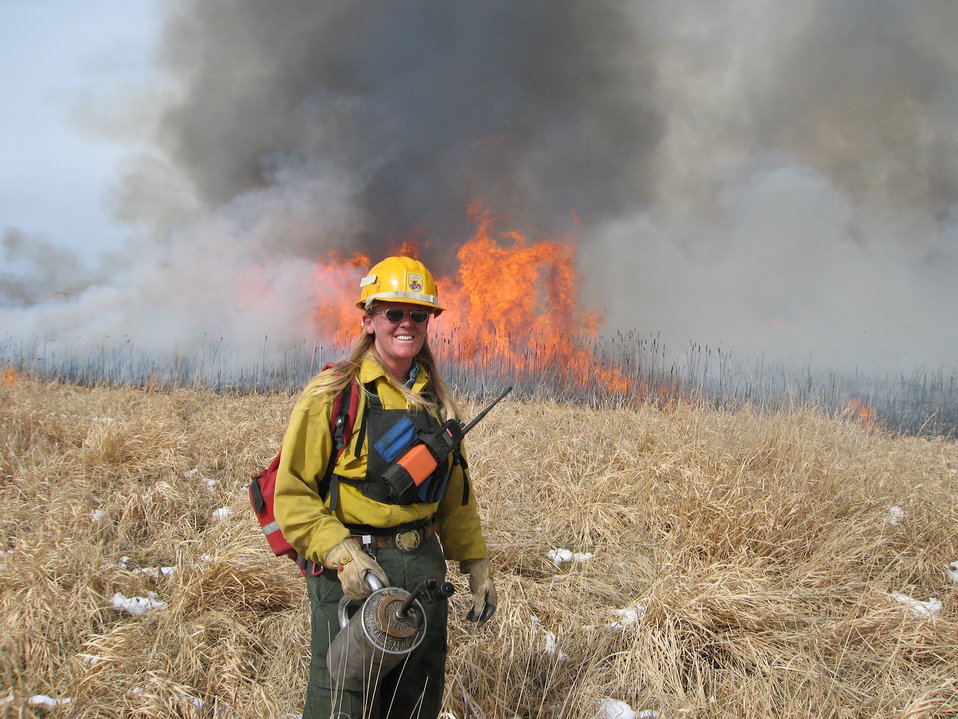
Habitat Maintenance

Fire can be used to reduce woody vegetation in grasslands or reduce cattail growth in wetlands, making them more attractive to a wide variety of waterfowl and other birds.